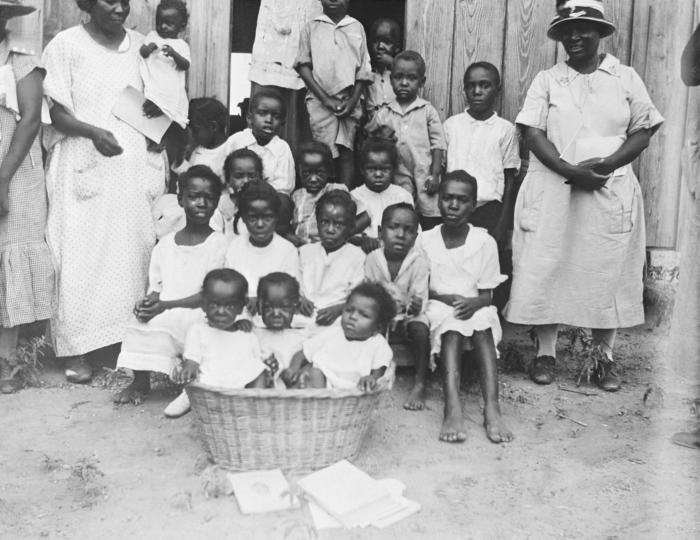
This historic photograph depicted a gathering that was billed as a Child Health Conference, which was held in a Texas school-house. The youngest in attendance was five years old. The original image was scanned from a glass lantern slide donated by the Minnesota Department of Health, and is contained in a historical collection devoted to observances of Child Health Day in the United States.